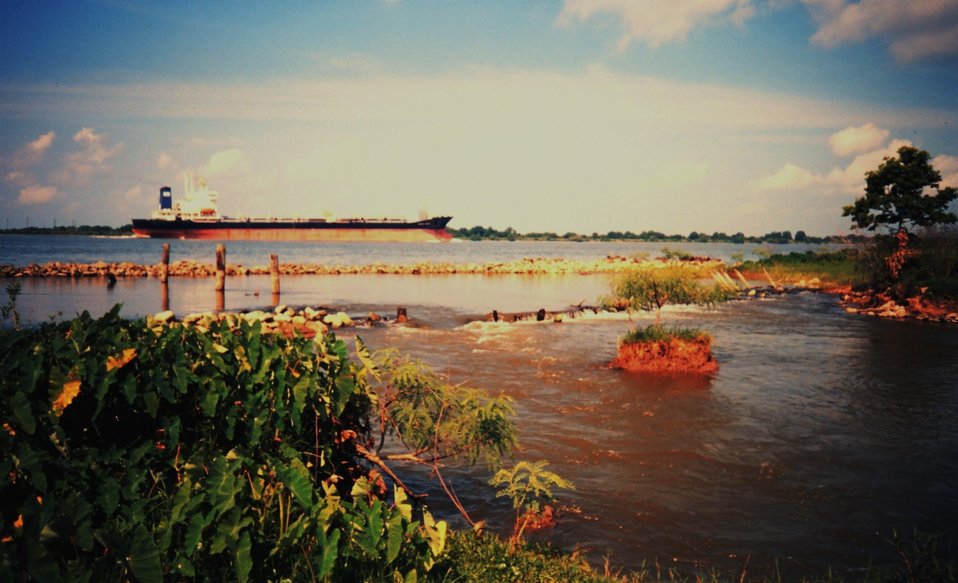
Tanker traffic on the Mississippi River during spring flooding. Mississippi River levee with river water coming through and flowing to a marsh east of the river. Flooding usually occurs every spring.